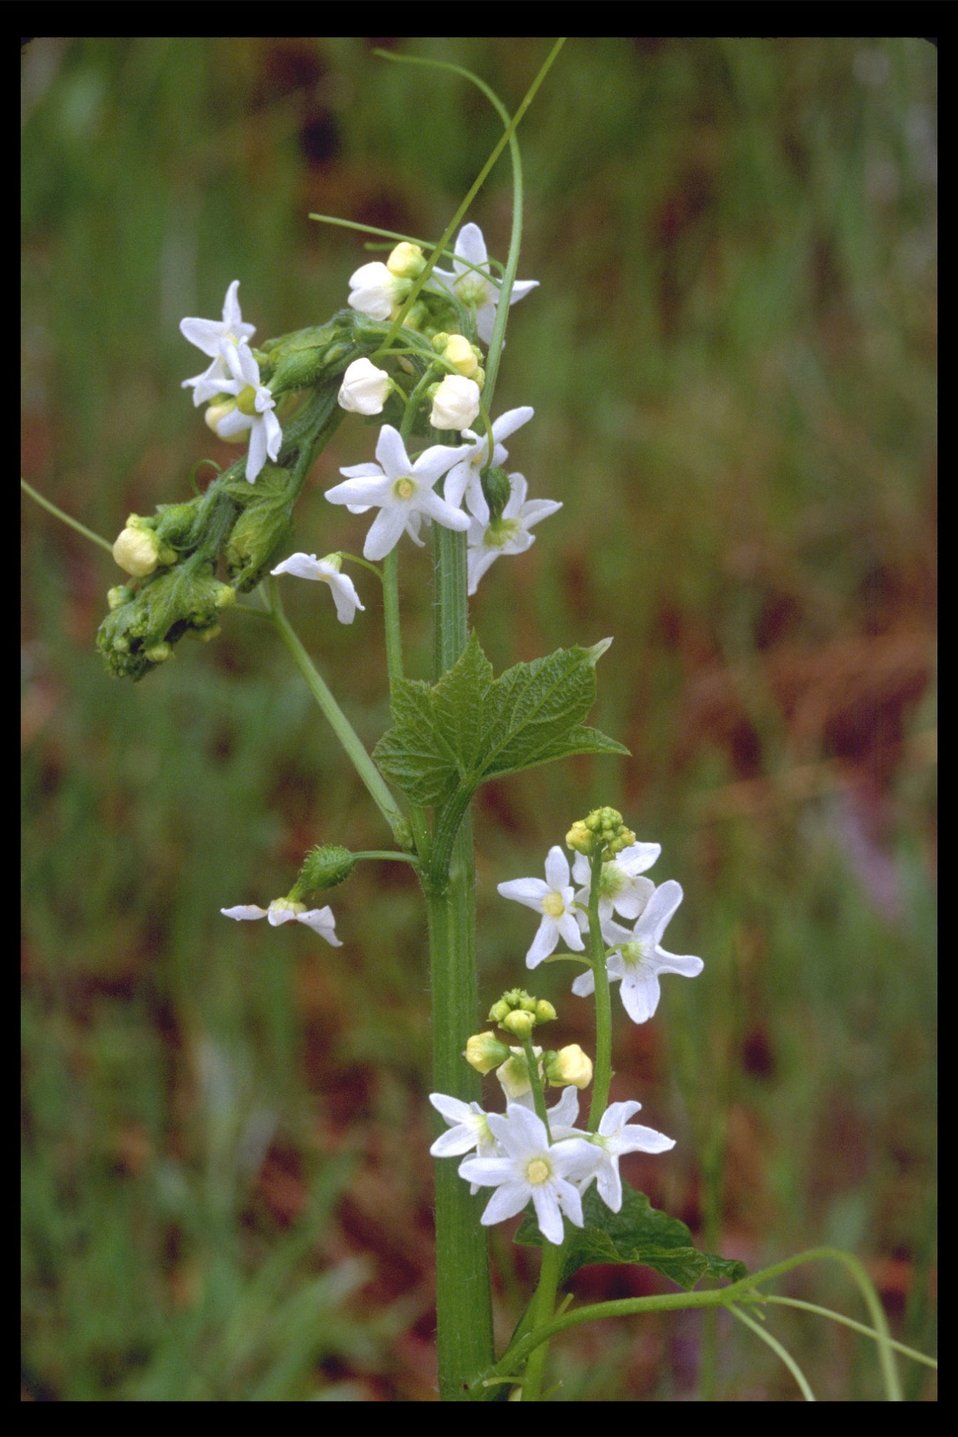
Wild Cucumber, also called the Coast Manroot, (Marah oreganus) found at Shady Cove near the Rogue River.